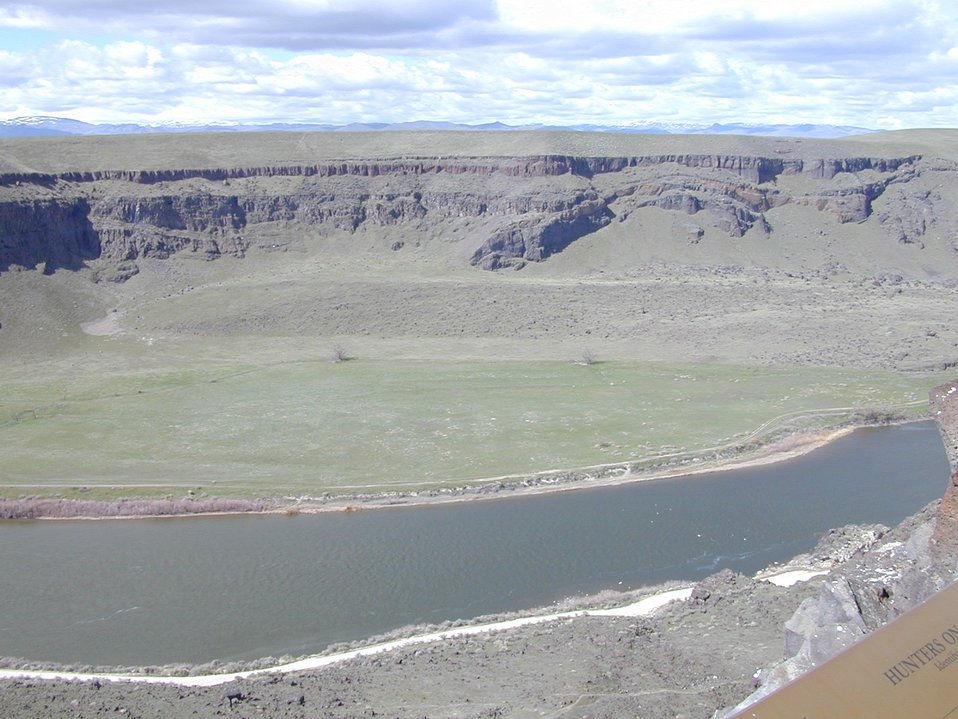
Snake River Birds of Prey National Conservation Area Lower Snake River District LSRD Snake River Canyon Scenic